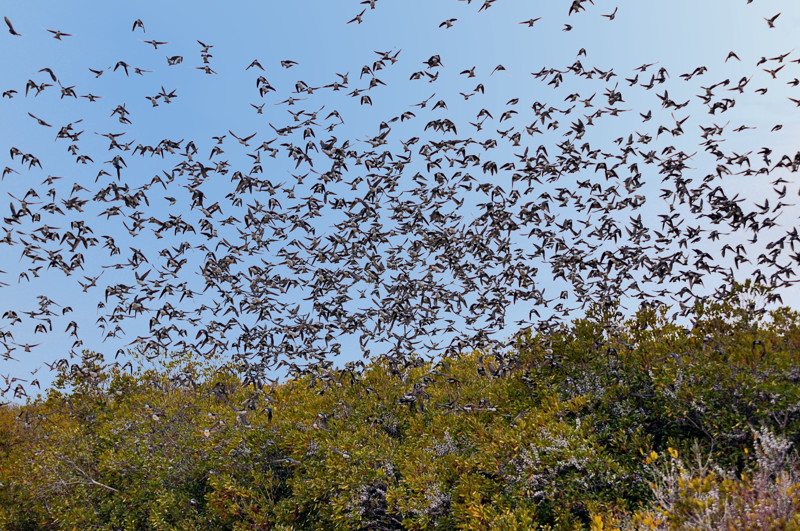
Tree swallow swarm

Eastern Shore of Virginia National Wildlife Refuge, VA.